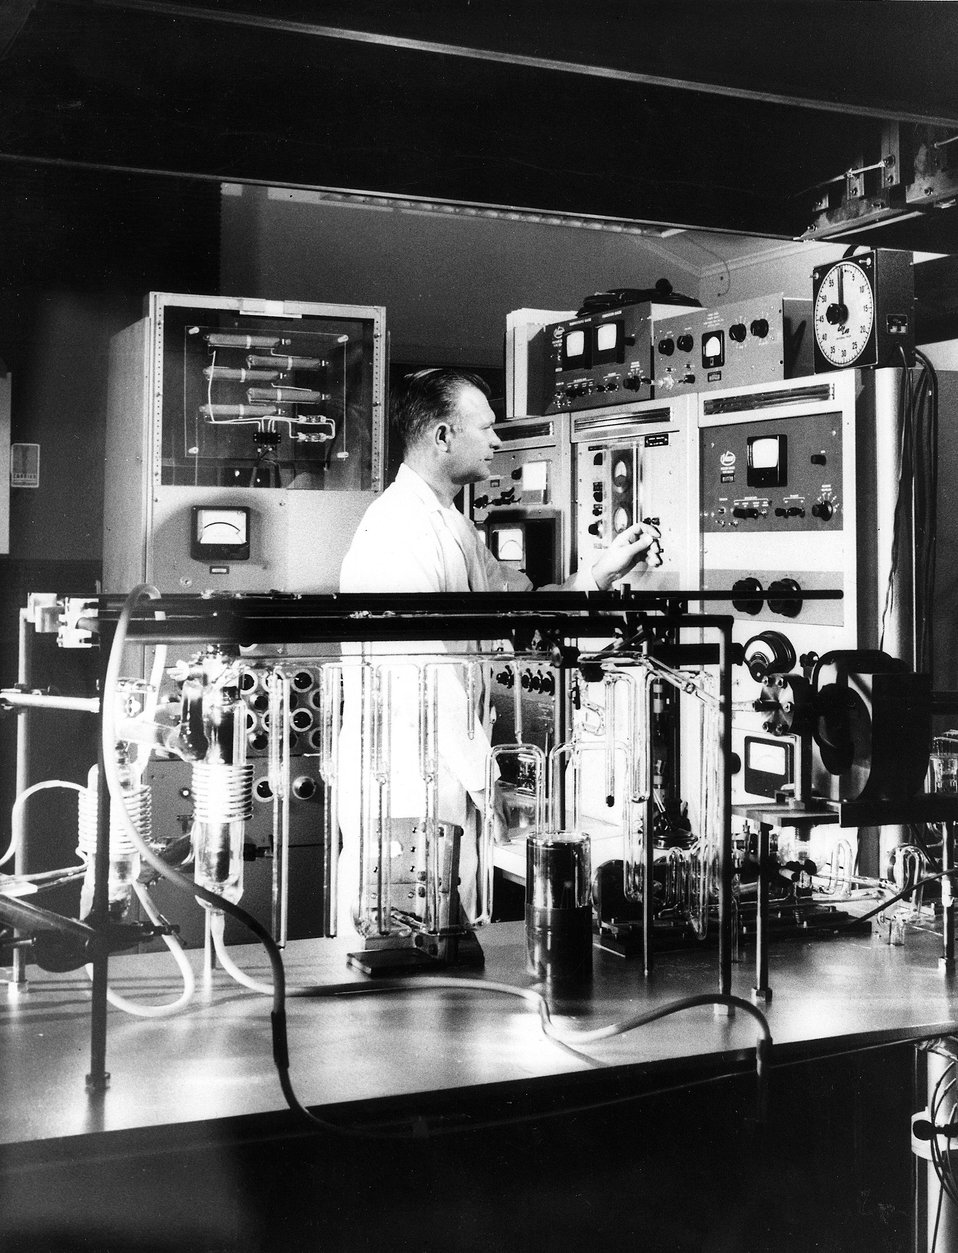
A high-sensitivity rare-gas mass spectrometer used in chemical research. c. 1963